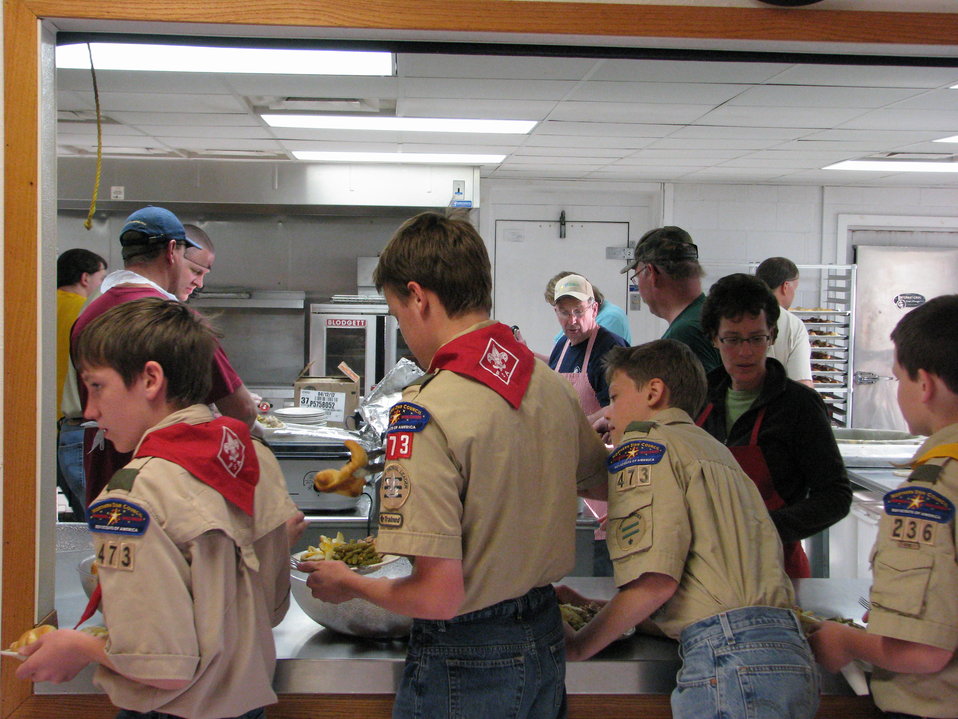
Boy Scouts ready to feast